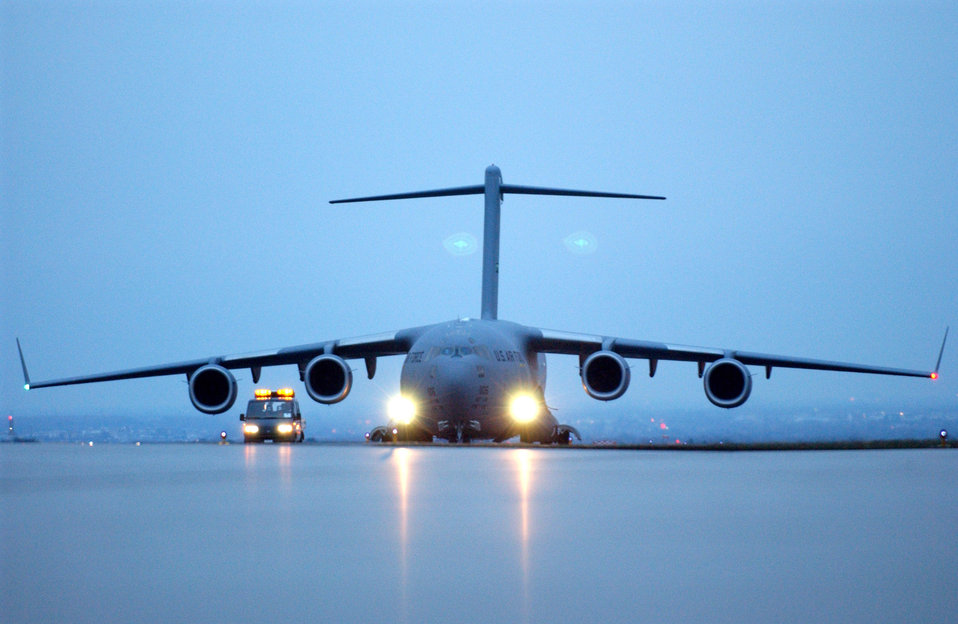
Thanks for the lift

AVIANO AIR BASE, Italy -- A C-17 Globemaster III arrives here Feb. 20 carrying 173rd Army Airborne Brigade Rangers based in Vicenza, Italy. The Rangers are returning to Italy after a nearly yearlong deployment in Iraq.